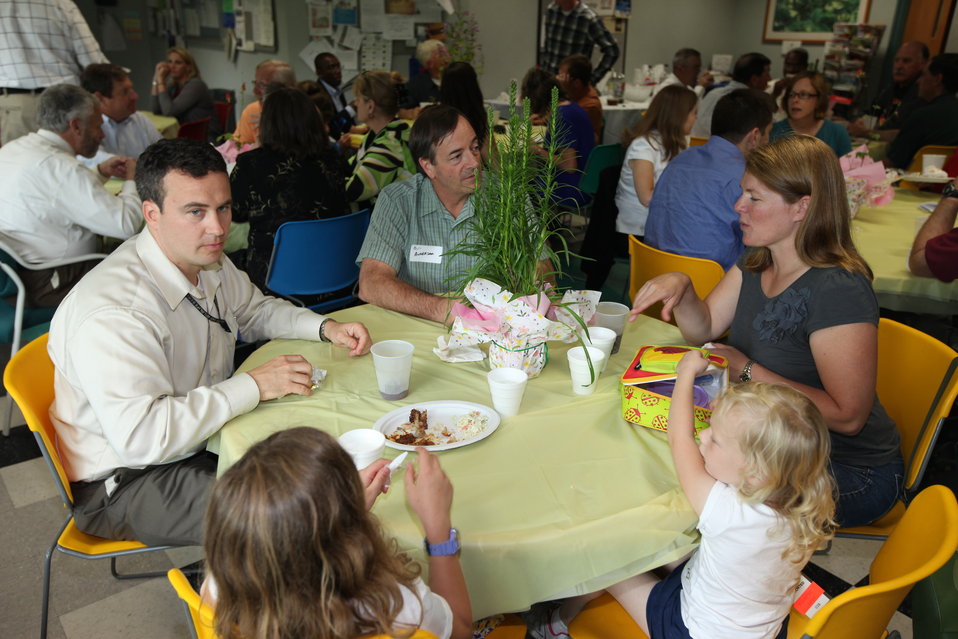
Northeast Region Employee Appreciation Awards

Luncheon